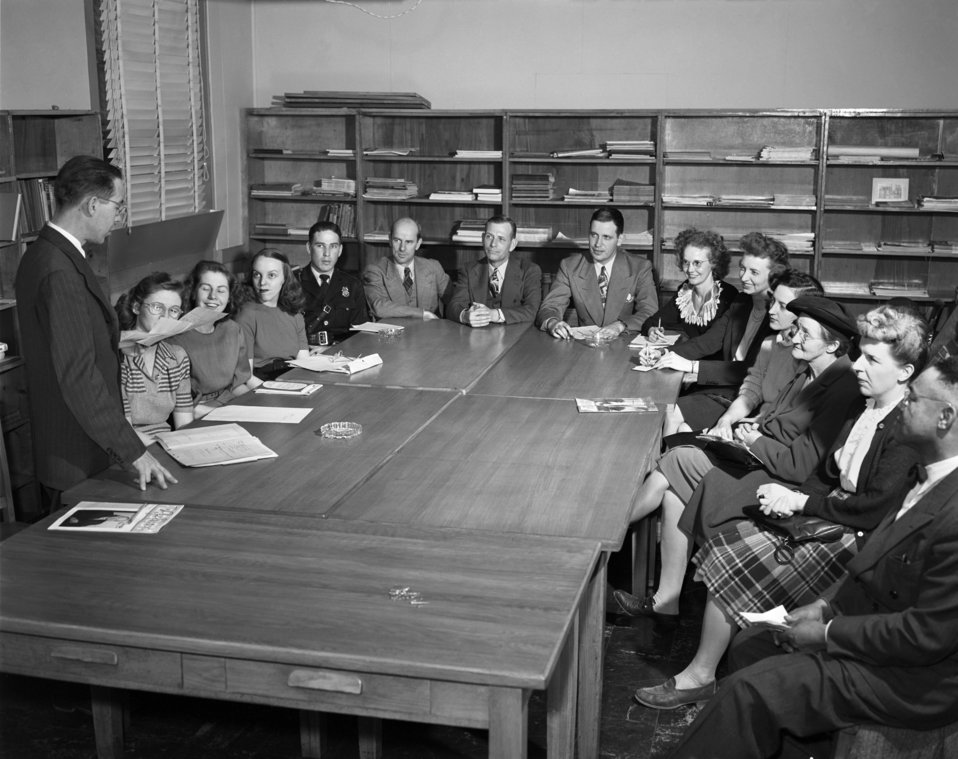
School Saftey Council Oak Ridge 1947

3302-3 DOE photo Ed Westcott 2-17-1947 Oak Ridge Tennessee